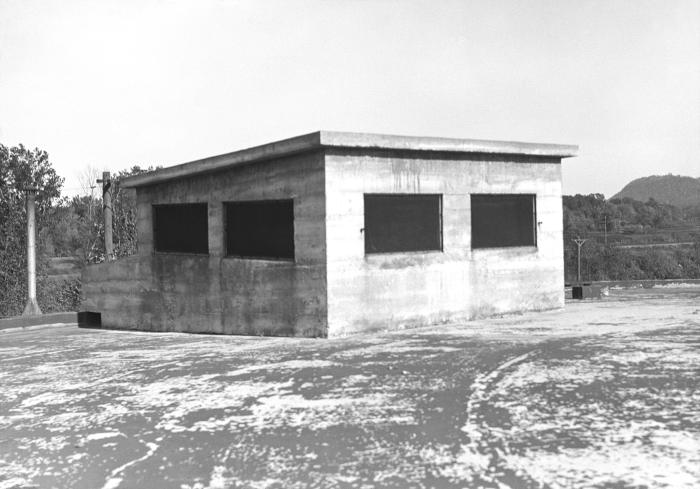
This historic 1934 photograph revealed the discovery of unprotected vents located on the Municipal Reservoir treatment plant in Red Wing, Minnesota. It was one of a series of instructional photographs used by the Minnesota Board of Health to train public health workers.